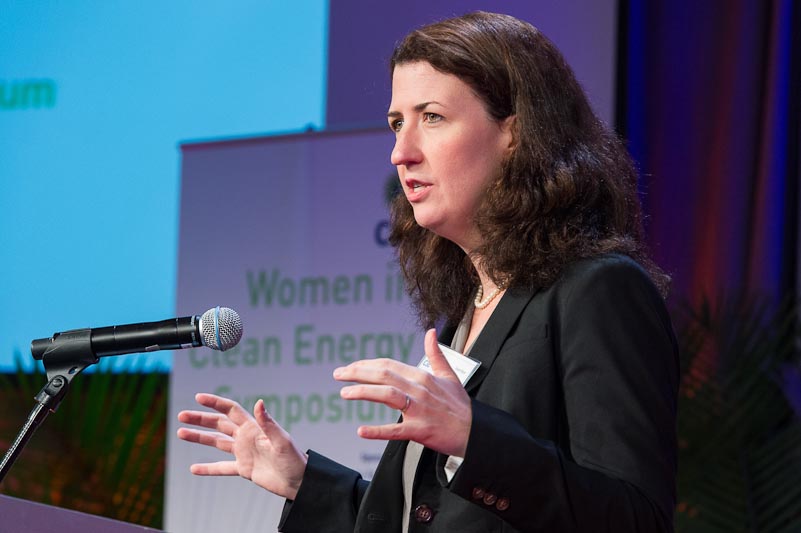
Tracey Holloway

C3E Award Winner, Education & Mentorship